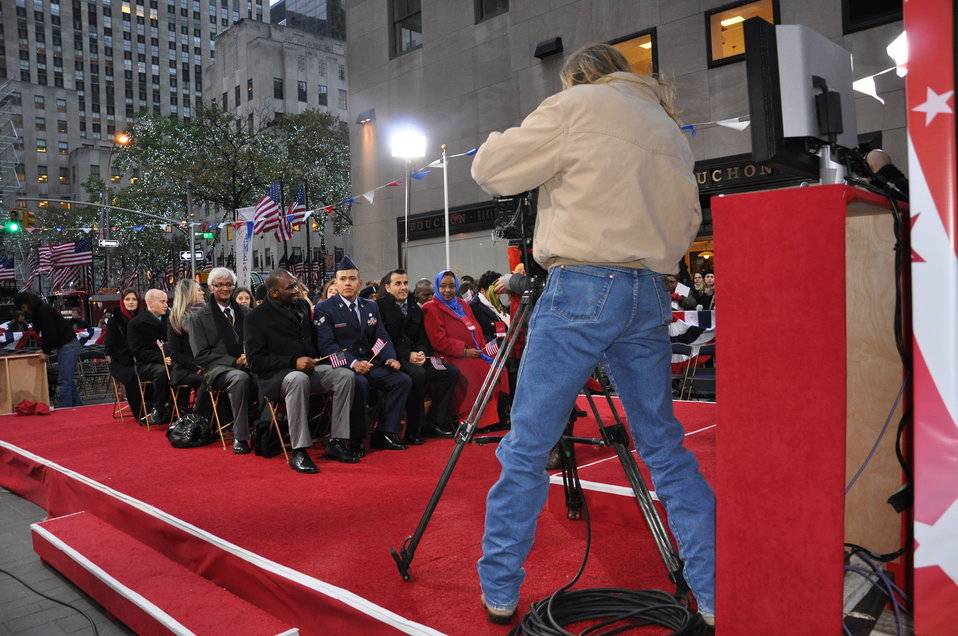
Airman gains citizenship

Senior Airman Jorge Contreras sits with group of immigrants preparing to take the U.S. citizenship oath live on NBC’s